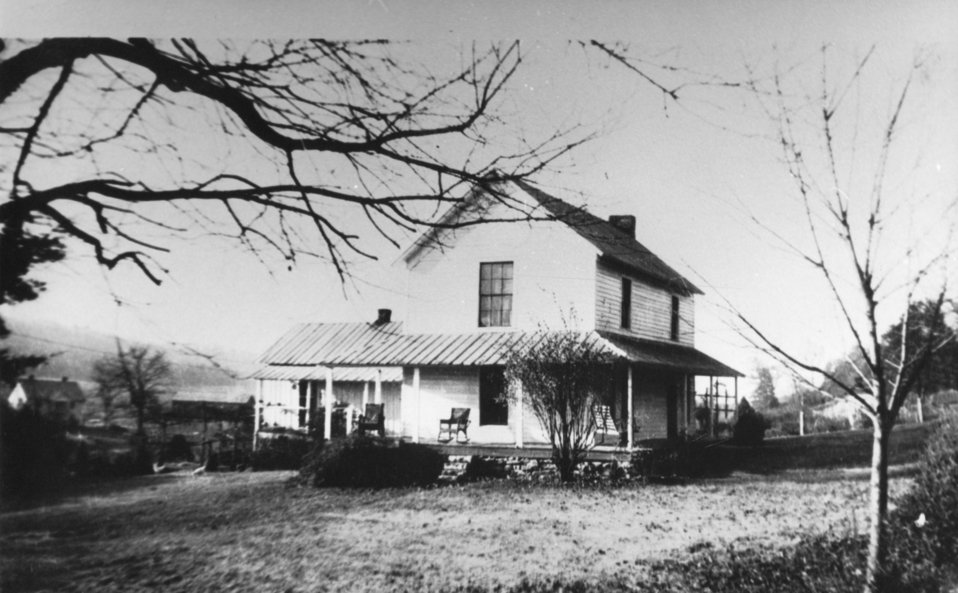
Early settlers at Oak Ridge